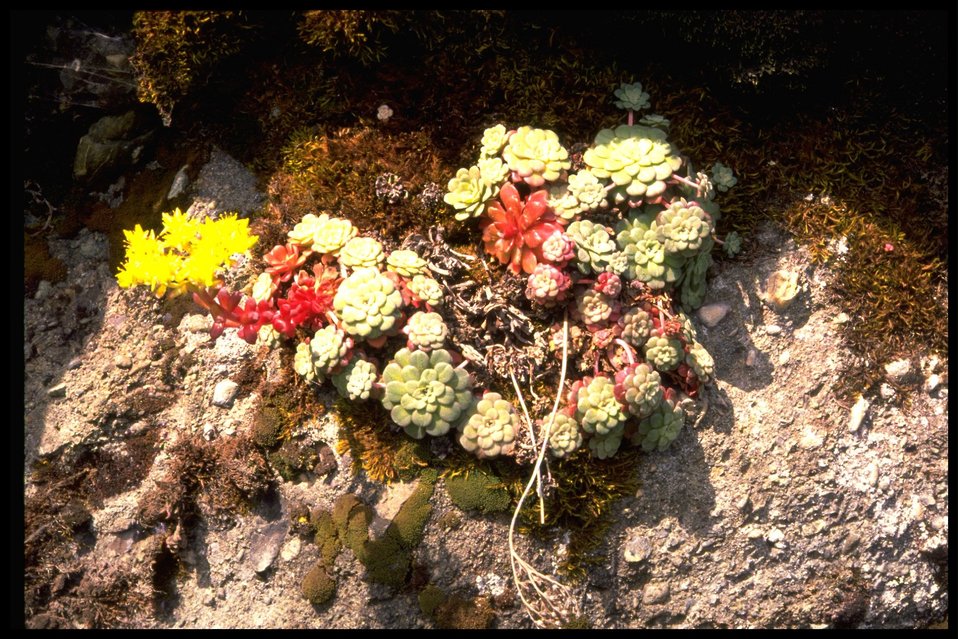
Medium shot of Purdy's stonecrop (Sedum spathulifolium ssp. purdyi).